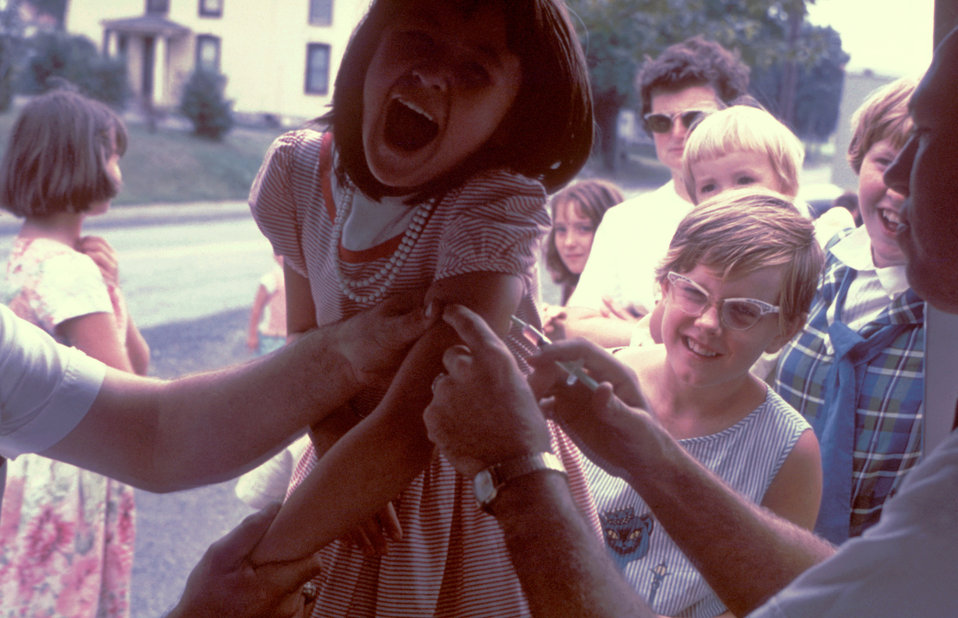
Here a young girl is receiving polio immunization injection at a mobile clinic.